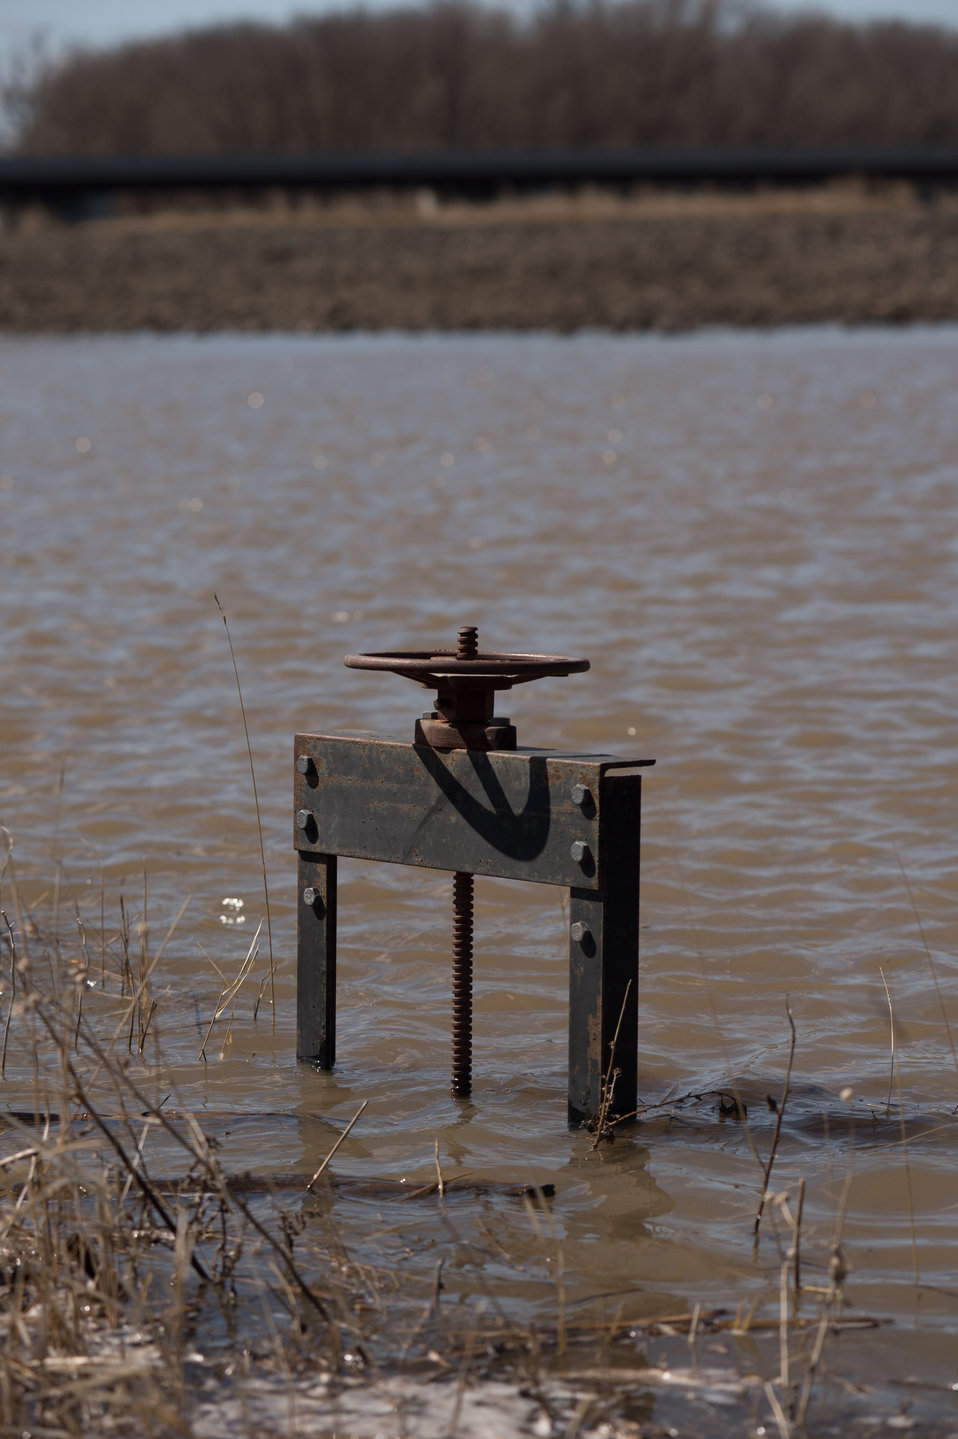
Water control valve for earthen dike at the Jeff Hoff farmstead in Perley, MN, on Tuesday, April 30, 2013. With the assistance of the U.S. Department of Agriculture (USDA), he was able to build up and modify an earthen dike that is currently holding back flood waters around his home, structures and farm equipment. To learn about the USDA Red River Basin Initiative, see www.mn.nrcs.usda.gov/news/features13/RRBI.html.